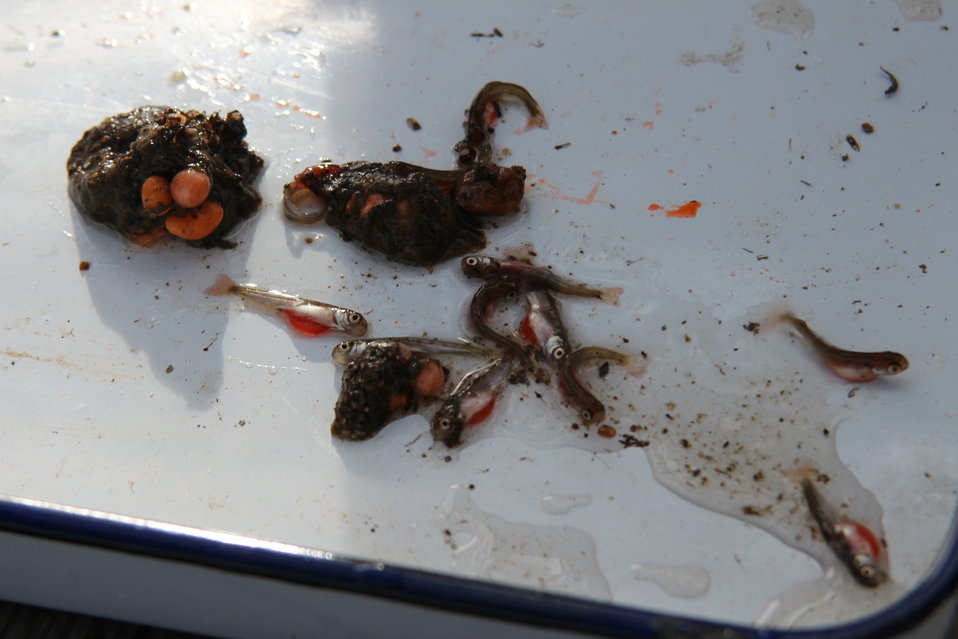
Salmon eggs and alevin

Contents of egg tubes include unhatched eggs and salmon alevin. The alevin are sorted into groups based on development and yolk sac remaining.